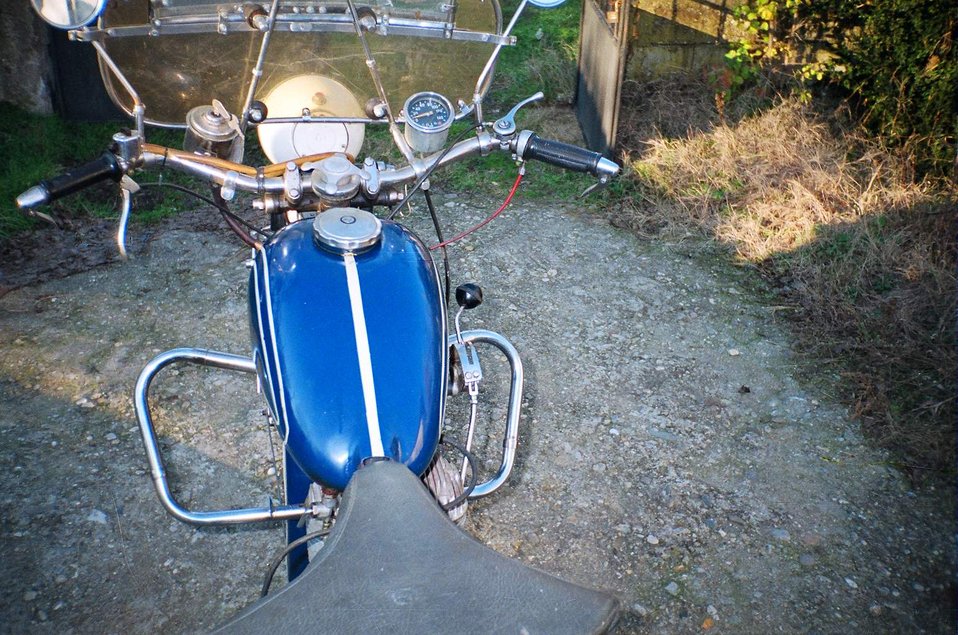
picture of my ORION 1927 motorcycle from my yahoo picture site